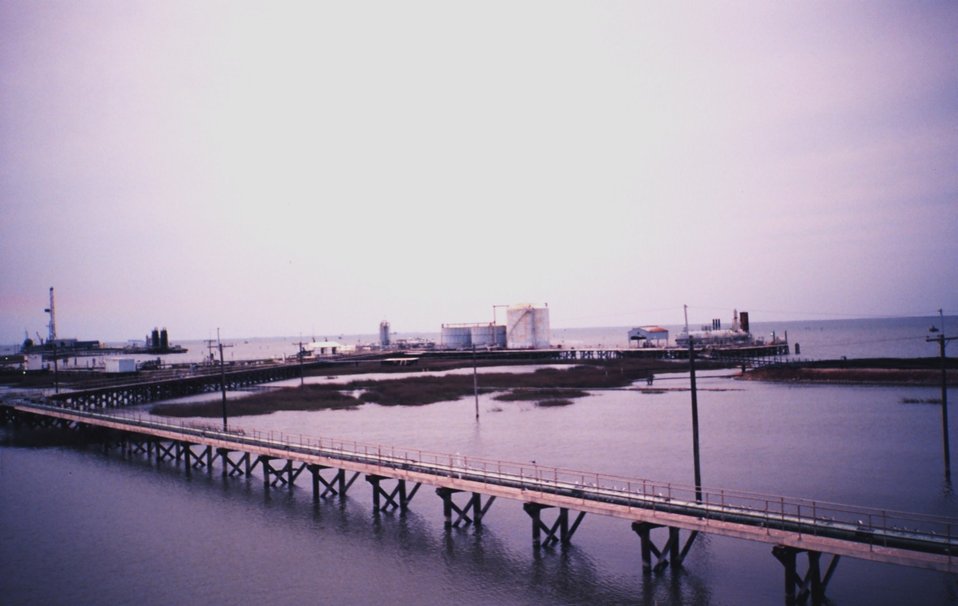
Greenhill Petroleum facility on East Timbalier Island